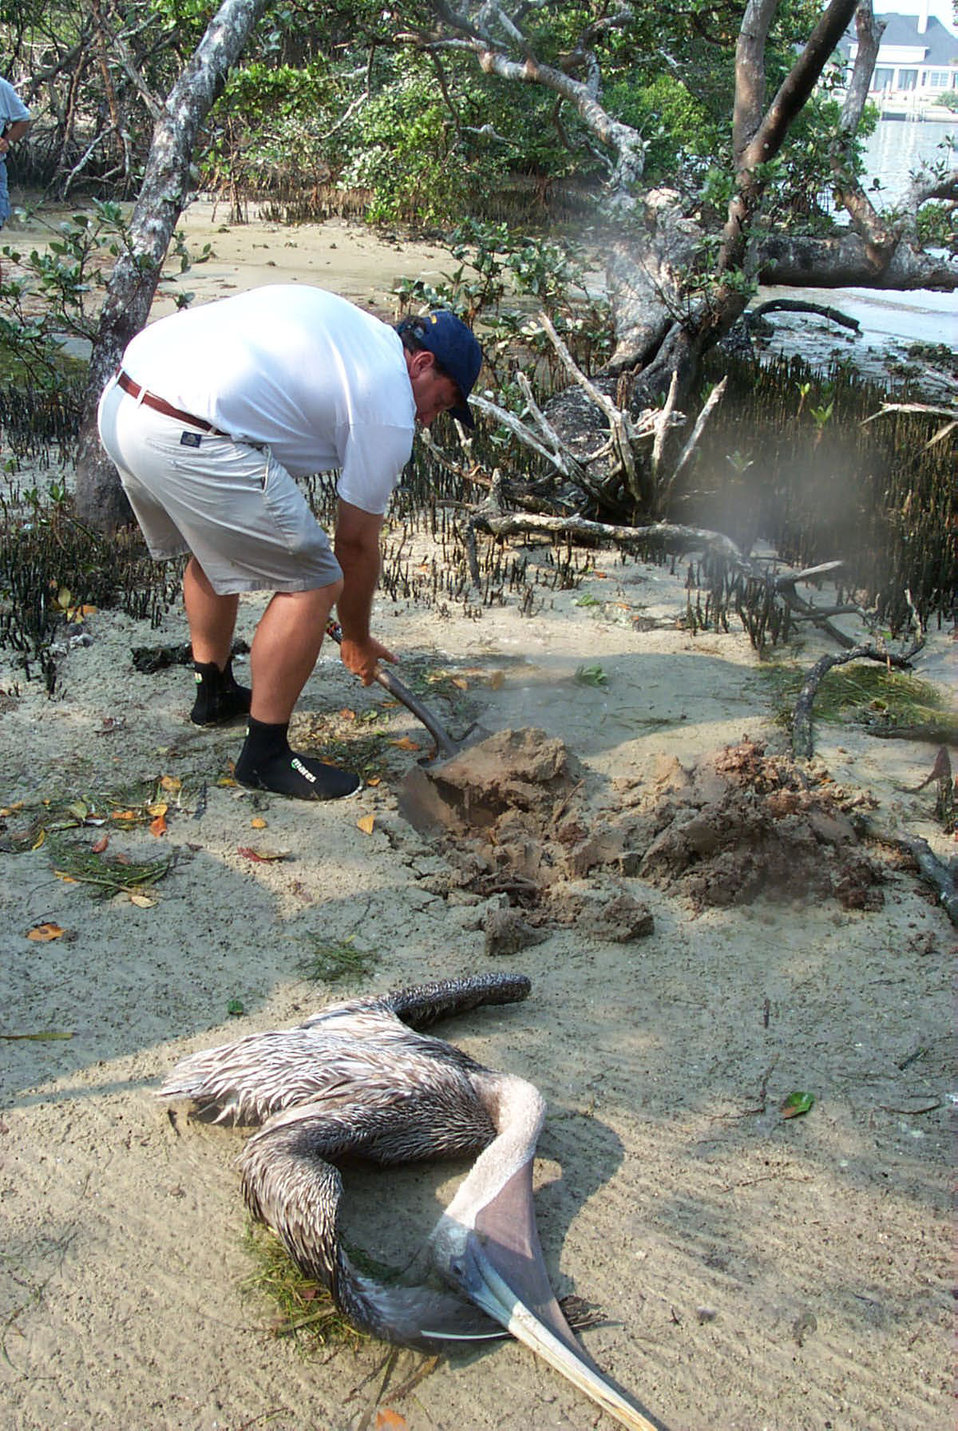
Scott Gudes buries a dead pelican that was removed from the mangroves where it was entangled in discarded monofilament.